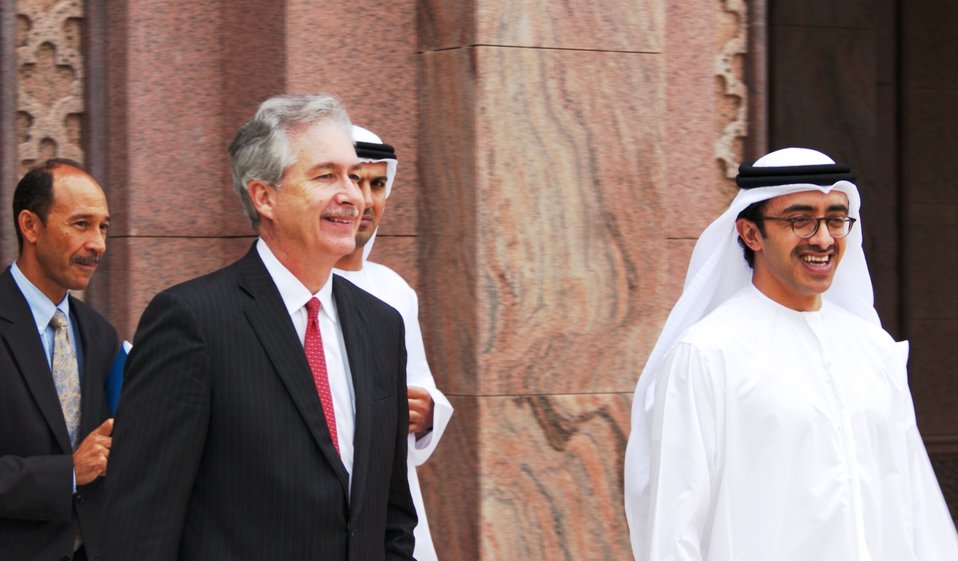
Deputy Secretary Burns Meets With UAE Foreign Minister Sheikh Abdullah bin Zayed

Deputy Secretary of State William Burns meets with United Arab Emirates Foreign Minister Sheikh Abdullah bin Zayed in Abu Dhabi, United Arab Emirates, December 14, 2012.